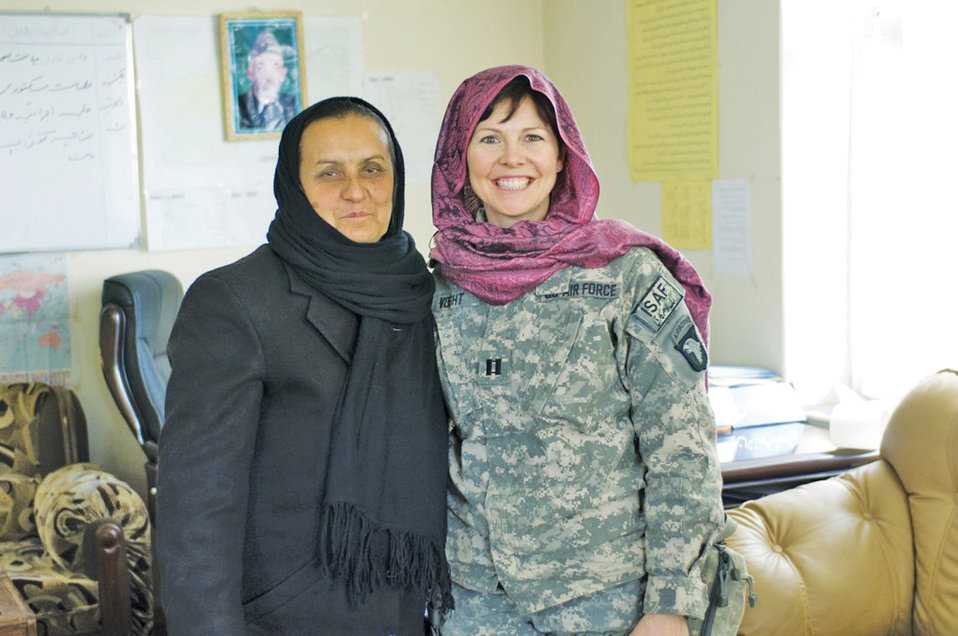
Officer improves Afghan lives through women's empowerment

Capt. Ann Voght meets with Ms. Kohistani in the provincial capital, Mahmud-E Raqi, Afghanistan. Captain Voght is assigned to the 56th Medical Operations Squadron, at Luke Air Force Base, Ariz. Ms. Kohistani is the Provincial Department of Women's Affairs director.